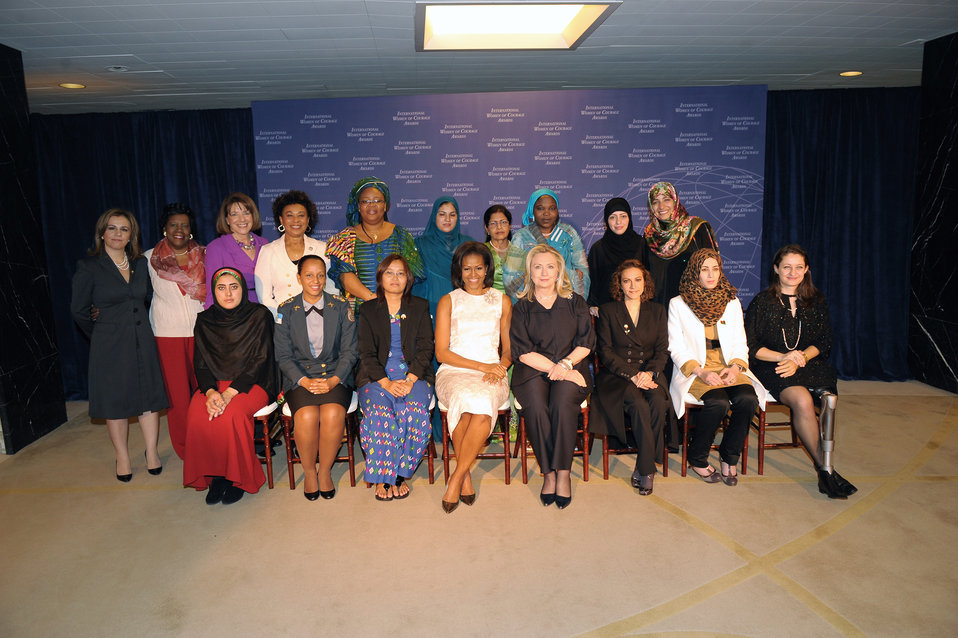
Secretary Clinton and First Lady Obama With 2012 IWOC Award Winners

U.S. Secretary of State Hillary Rodham Clinton, front row center right; and First Lady Michelle Obama, front row center left; pose for a photo with the 2012 International Women of Courage (IWOC) Award Winners at the U.S. Department of State in Washington, D.C., on March 8, 2012.